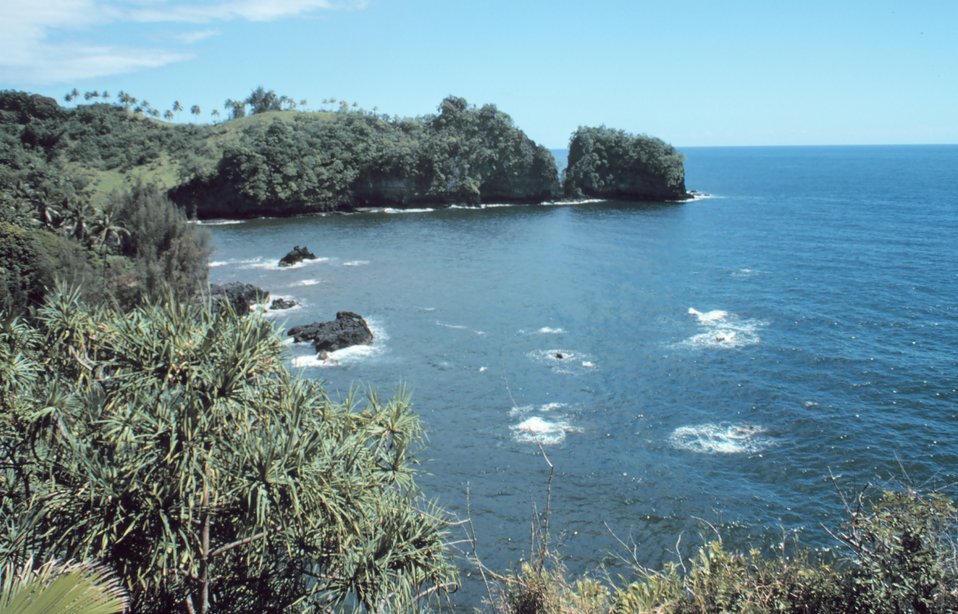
A coastal scene north of Hilo